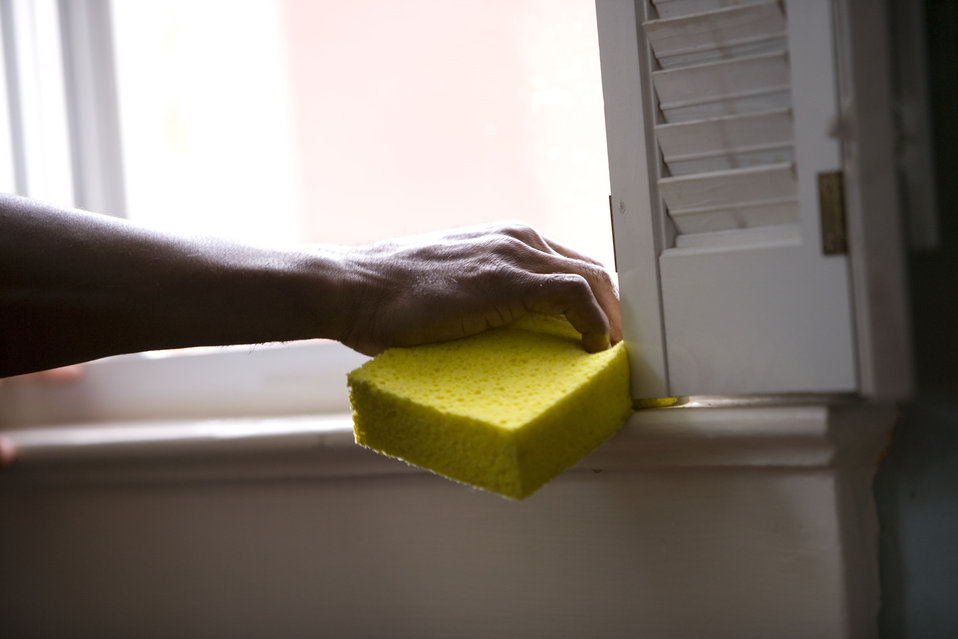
When renovating a home, you should use a damp sponge or cloth to clean dust collected on a window sill, as the dust may contain asbestos or lead-based paint. Home maintenance is an ongoing process for any homeowner, and here we see an African-American man as he was preparing a window in his home for a general cleaning.